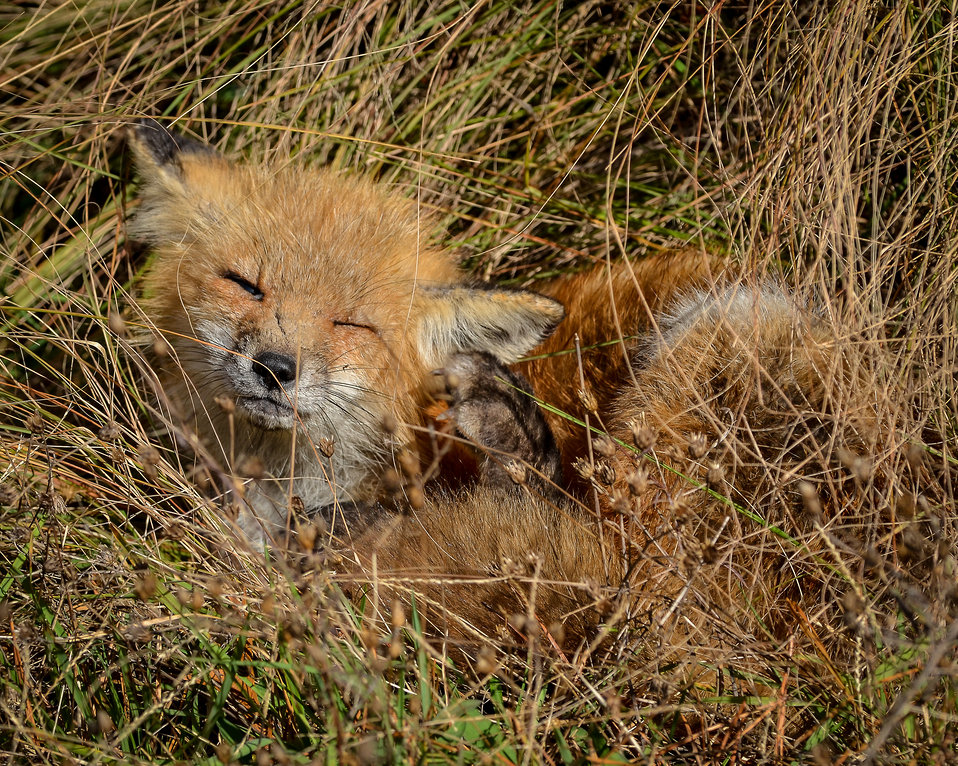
Red fox by Don Freiday

Red fox photographed at Edwin B. Forsythe National Wildlife Refuge by Don Freiday